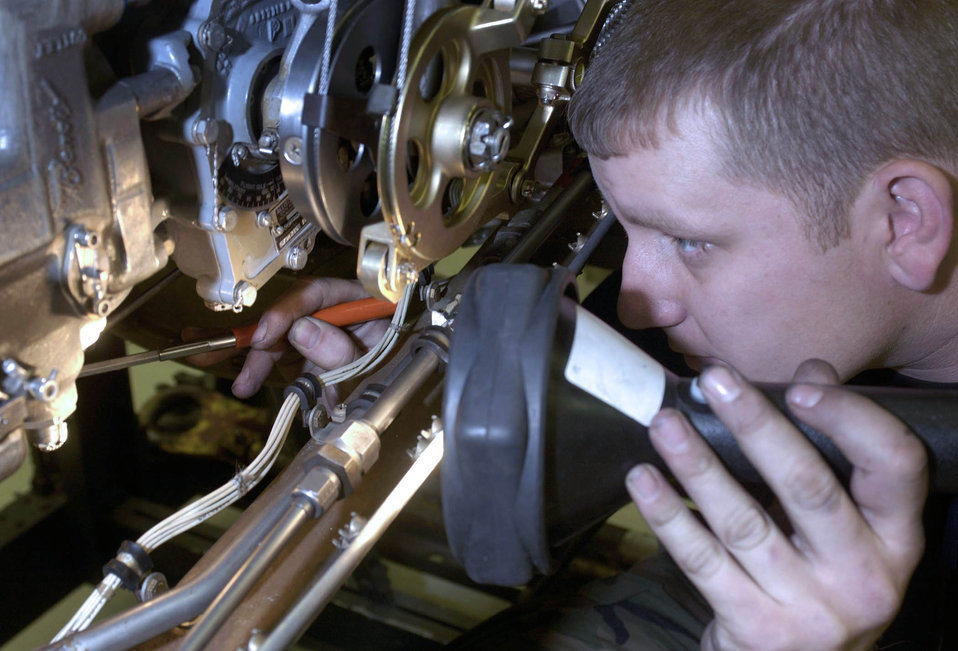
Herculean engine

RAMSTEIN AIR BASE, Germany -- Staff Sgt. Anthony Price prepares a C-130 Hercules engine for final quality control inspection. The 86th Maintenance Squadron's propulsion flight here is the focal point for any C-130 engines needing repairs in Europe or those deployed supporting operations Iraqi Freedom and Enduring Freedom. Sergeant Price is on temporary duty here from the 463rd Maintenance Operations Squadron at Little Rock Air Force Base, Ark.